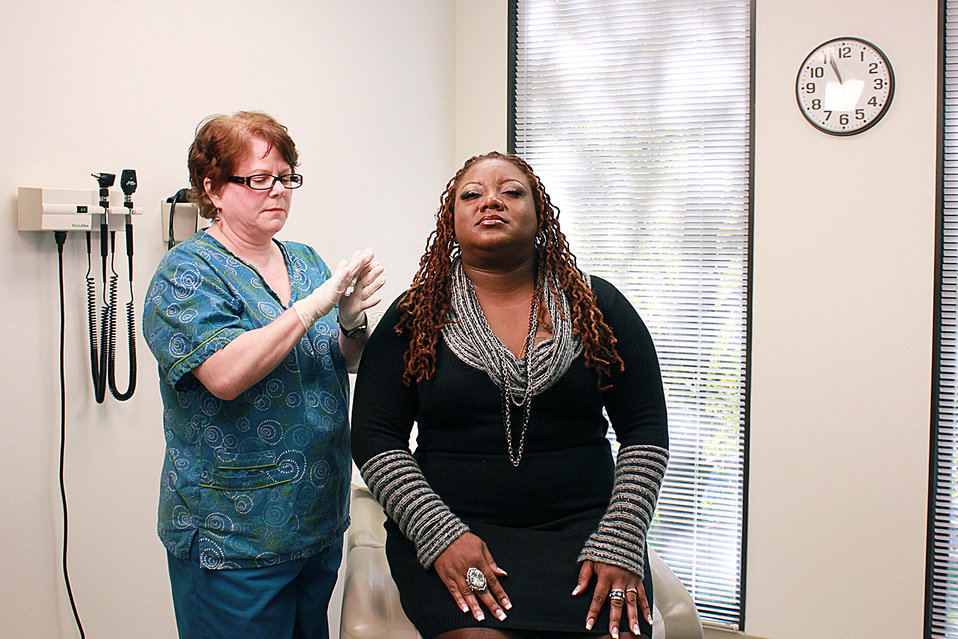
This image depicts a qualified nurse in a clinical setting, who was about to administer a dosage of FluMist� live attenuated intranasal vaccine LAIV) into the nasal cavity of a female patient. In this particular view, the nurse was rolling the nasal vaccine sprayer between her hands, gently mixing the contents prior to its administration.